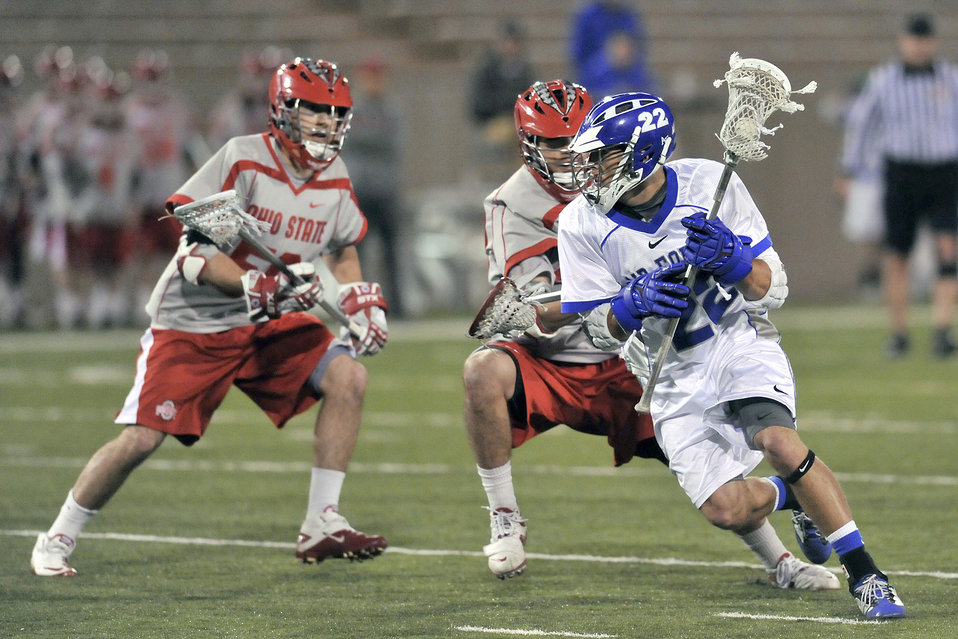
Falcons vs. Buckeyes

Falcons junior attacker Adam Paranka maneuvers around defensemen during action against the Ohio State Buckeyes April 17, 2011, at Falcon Stadium in Colorado Springs, Colo.